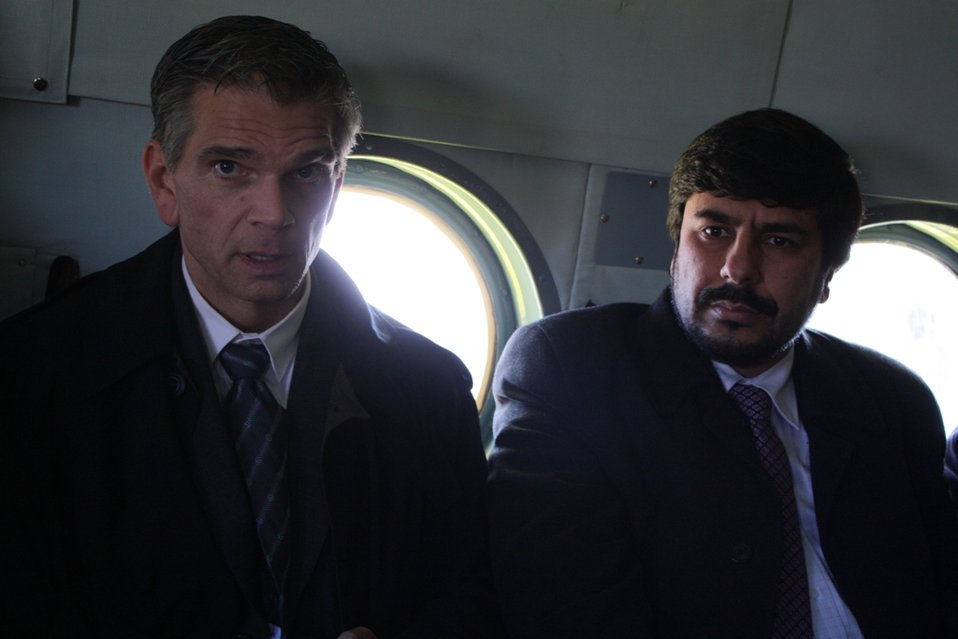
USAID Mission Director Gast and Minister Mansoori